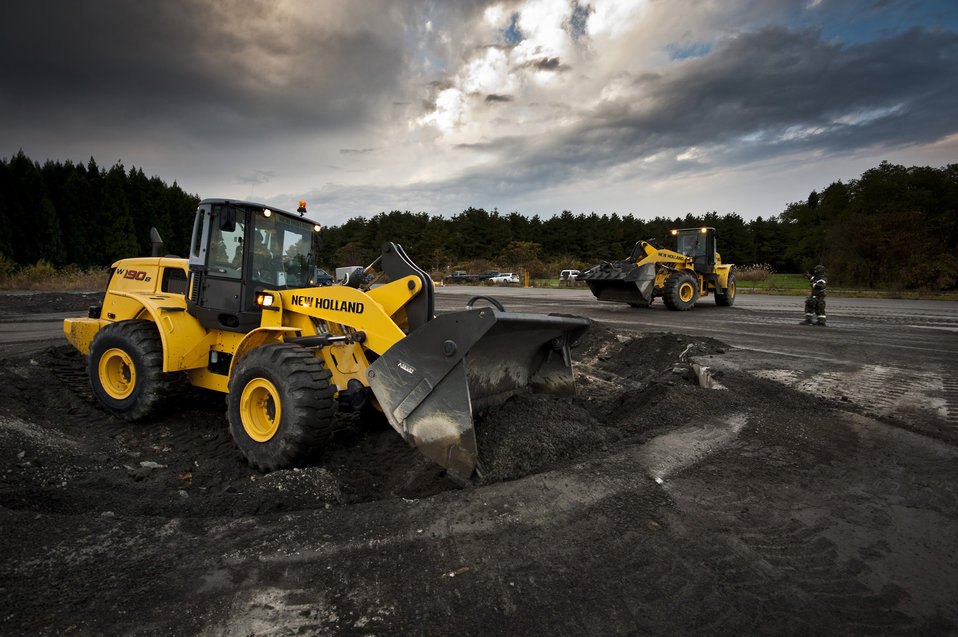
Crater no more

Two front-end loaders from the 35th Civil Engineer Squadron clear debris from a 'missile impact' crater during an operational readiness exercise Nov. 8, 2010, at Misawa Air Base, Japan.